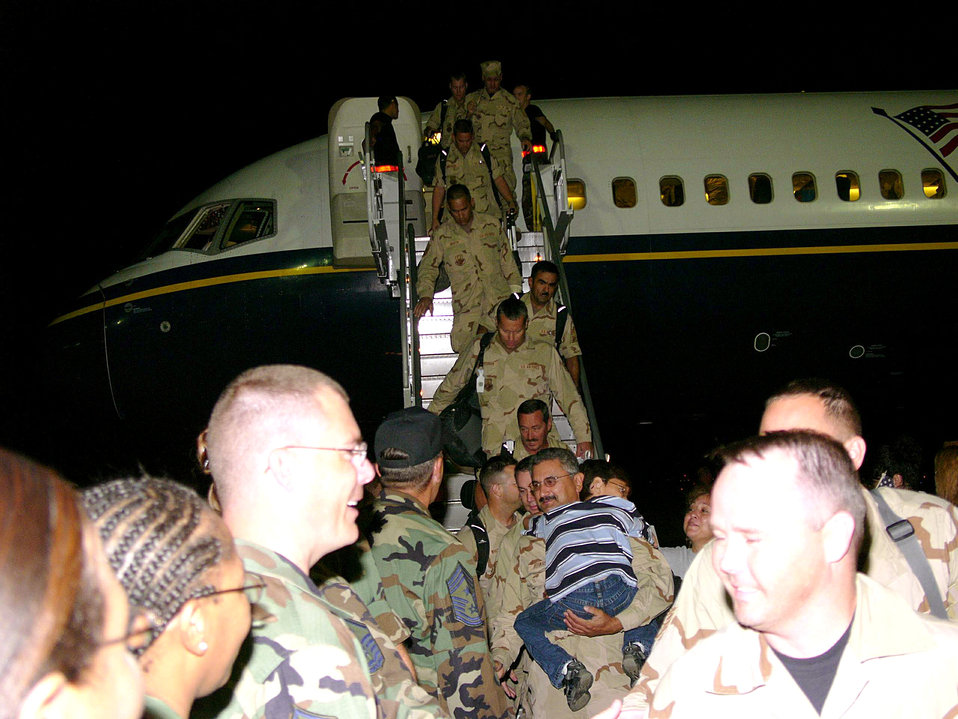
It's good to be home

ELLINGTON FIELD, Texas -- Airmen with the 147th Fighter Wing return home from Balad Air Base, Iraq on Sept. 25. Many of the Airmen's families were there to meet them despite being evacuated for Hurricane Rita.